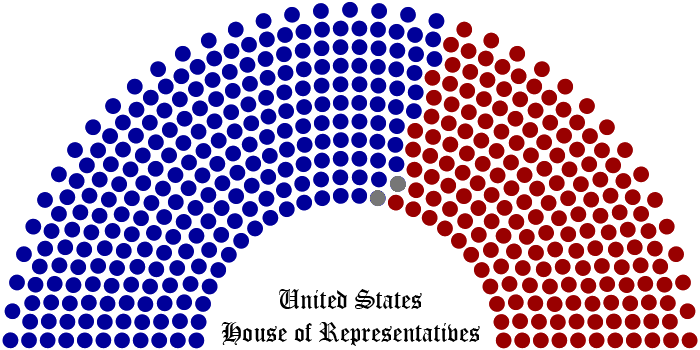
Tiếng Việt: Thành phần chính đảng tại Viện Dân biểu Xanh: Dân biểu Đỏ: Cộng hoà Xám: trống (Emmanuel and Gillibrand)